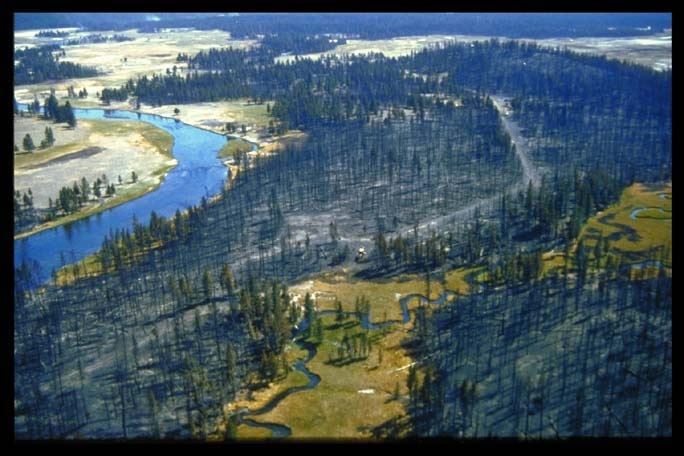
Burned area